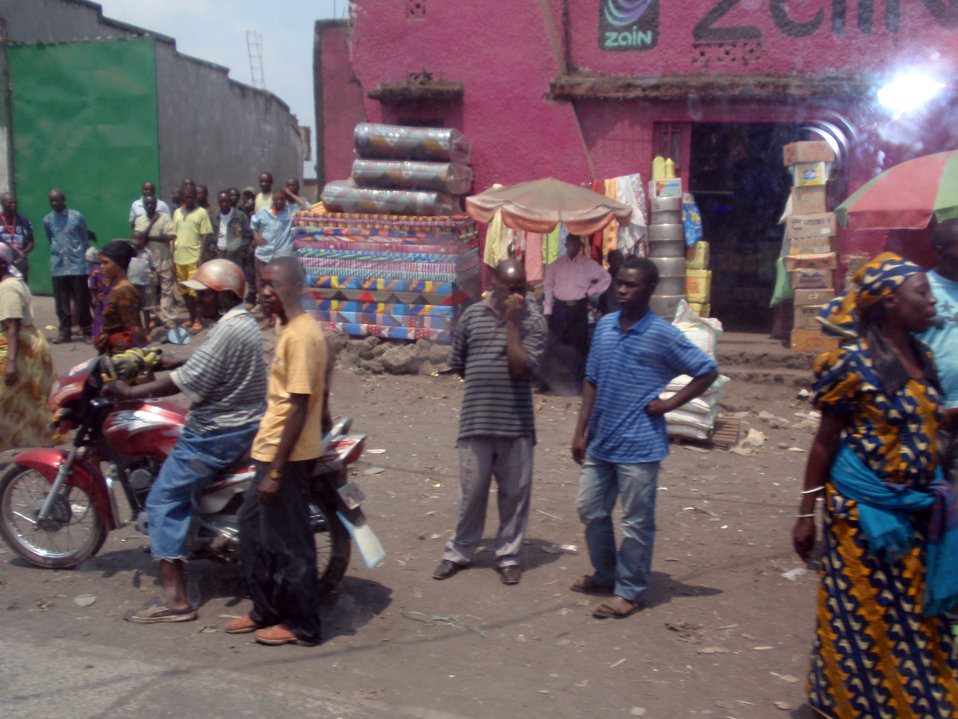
Behind the Scenes: Goma, Democratic Republic of Congo

The scenes in Goma, Democratic Republic of Congo August 11, 2009, the same day that the U.S. Secretary of State Hillary Rodham Clinton visited.